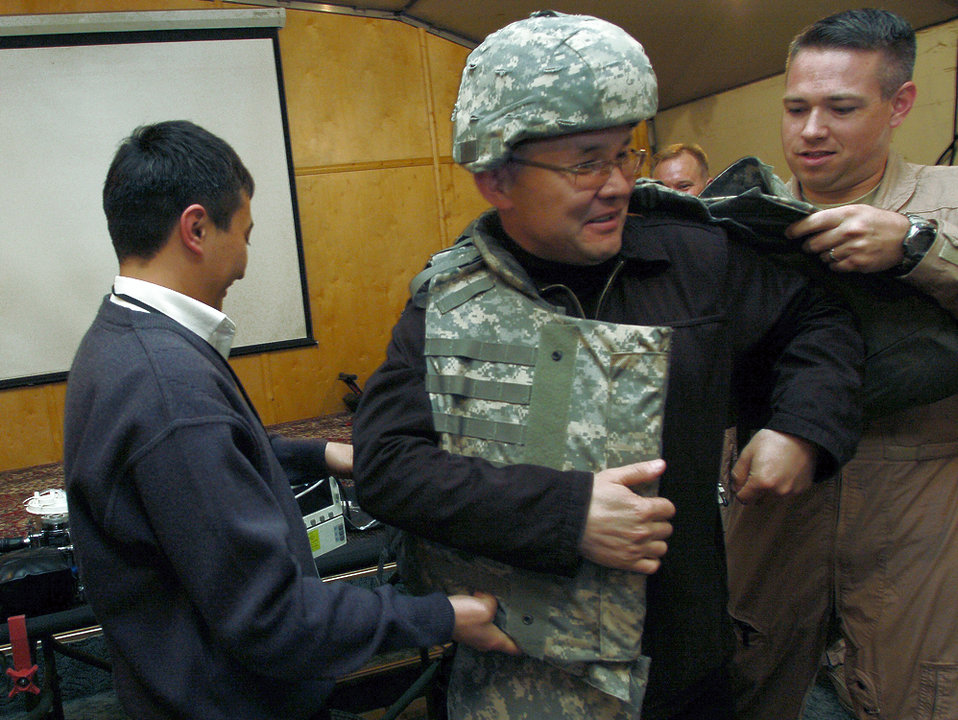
Med group holds symposium

Maj. Glenn Donnelly helps a Kyrgyz guest try on body armor at Manas Air Base, Kyrgyzstan, during a recent coalition medical symposium hosted by the 376th Expeditionary Medical Group. Guests attending the symposium were from the Spanish coalition medical staff, U.S. Embassy medical unit, Peace Corps medical staff and the Bishkek Research Center of Trauma and Orthopedics. Major Donnelly is deployed from Barksdale Air Force Base, La. .